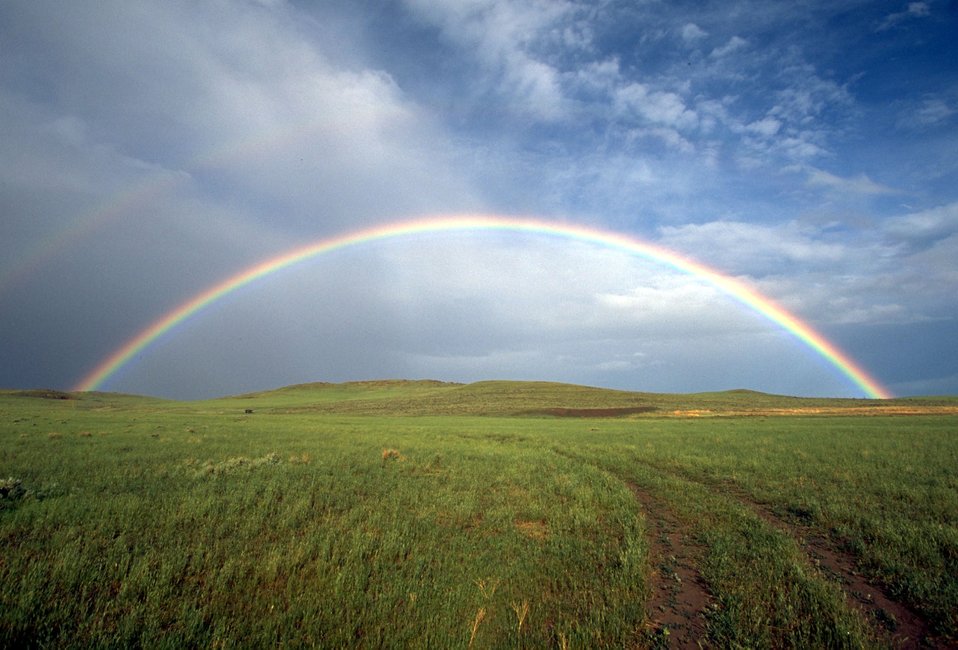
The ""perfect"" Rainbow on the prairies of Montana